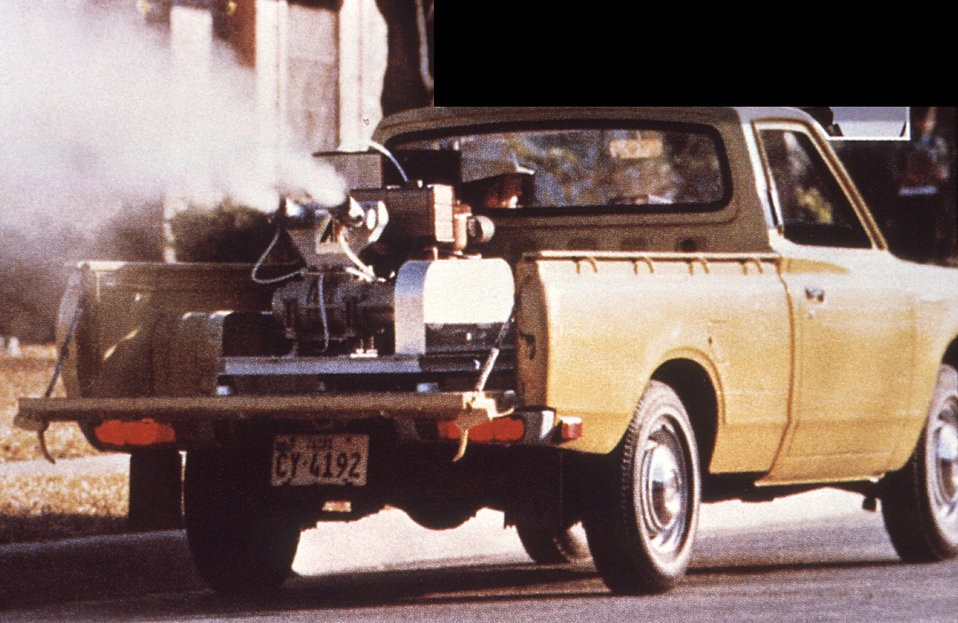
This flatbed pick-up truck was equipped with a Micro-GenTM fog generator, which is being used in an attempt to control populations of potential disease vectors by disseminating an insecticide fog into their warehouse habitat.